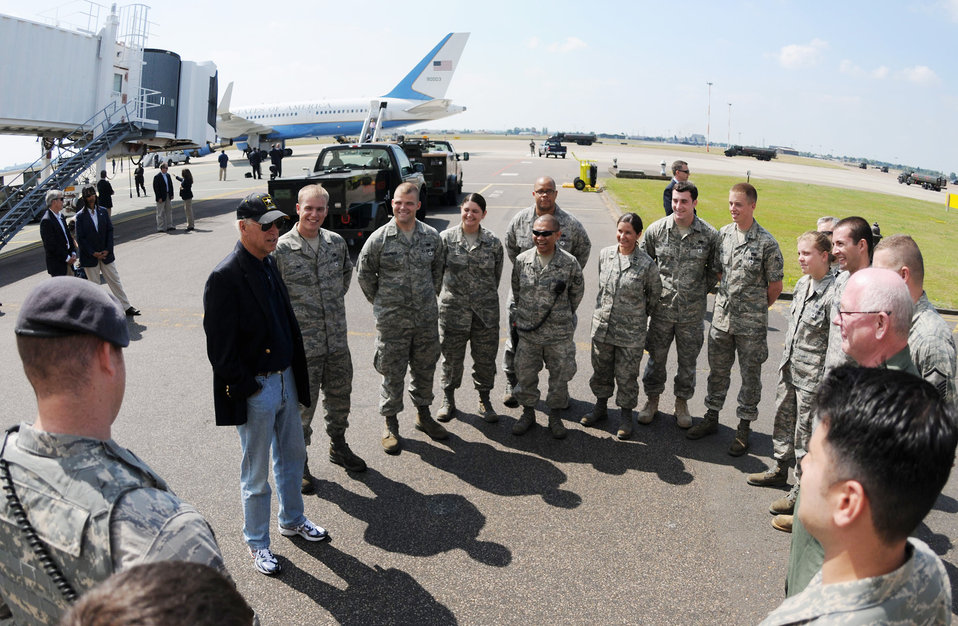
Vice president visits RAF Mildenhall, meets Airmen

Vice President Joe Biden talks with a group of Airmen and thanks them for their service while encouraging them to continue doing a great job July 2 at Royal Air Force Mildenhall, England. The vice president stopped at the base for a few hours en route to an unspecified location.